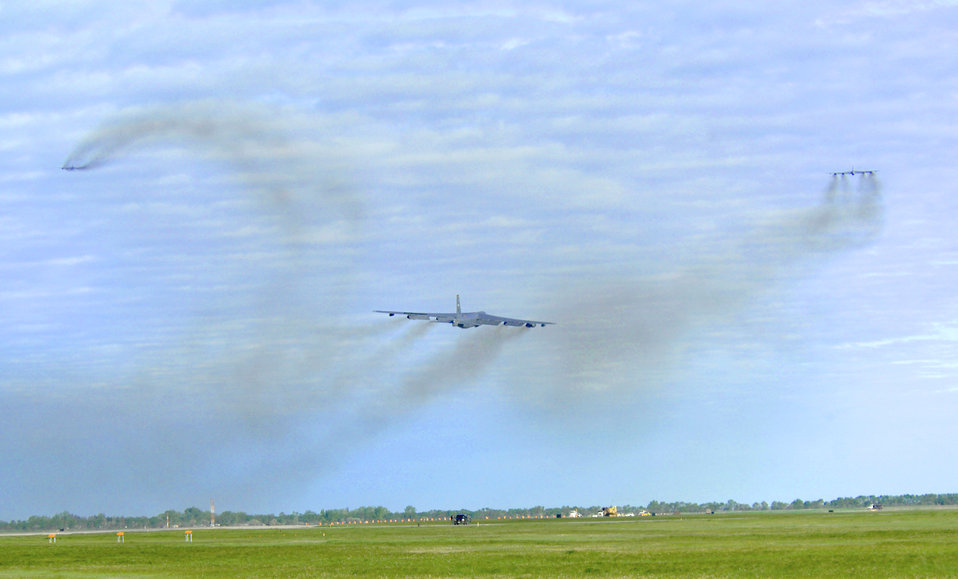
B-52s head to Guam.

Three B-52H Stratofortesses take off on their way to Andersen Air Force Base, Guam, as part of a deployment June 2, 2010, at Minot Air Force Base, N.D. During the six-month deployment, nearly 350 Airmen and more than five B-52s will provide U.S. Pacific Command with a continuous bomber presence in the Asia-Pacific region.